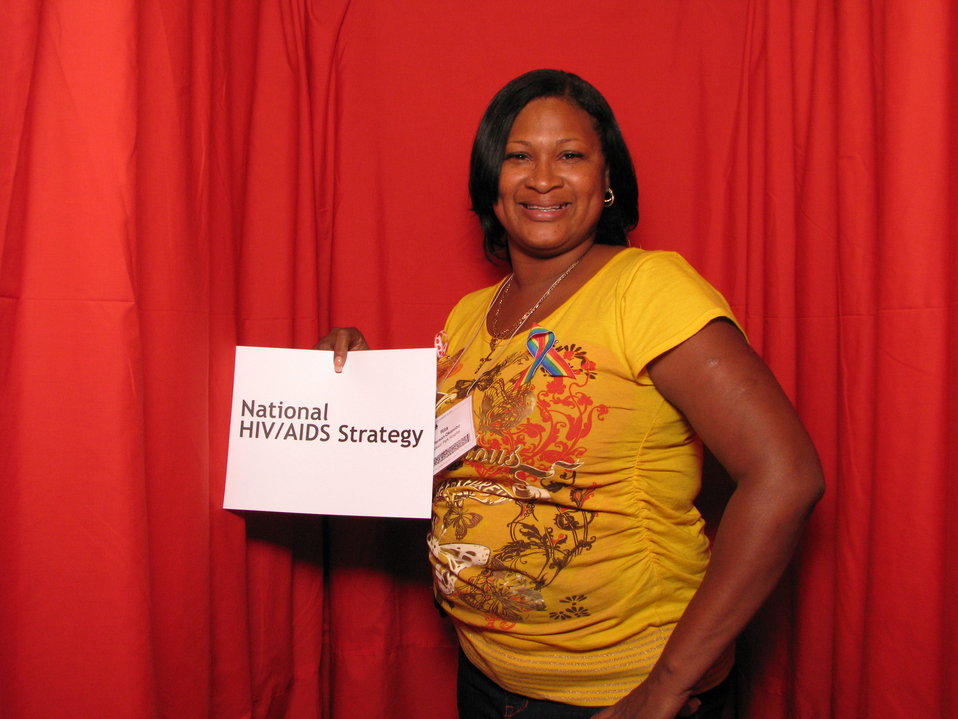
National HIV/AIDS Strategy

From the AIDS.gov photo booth at the U.S. Conference on AIDS, September 2010 (Orlando, FL).